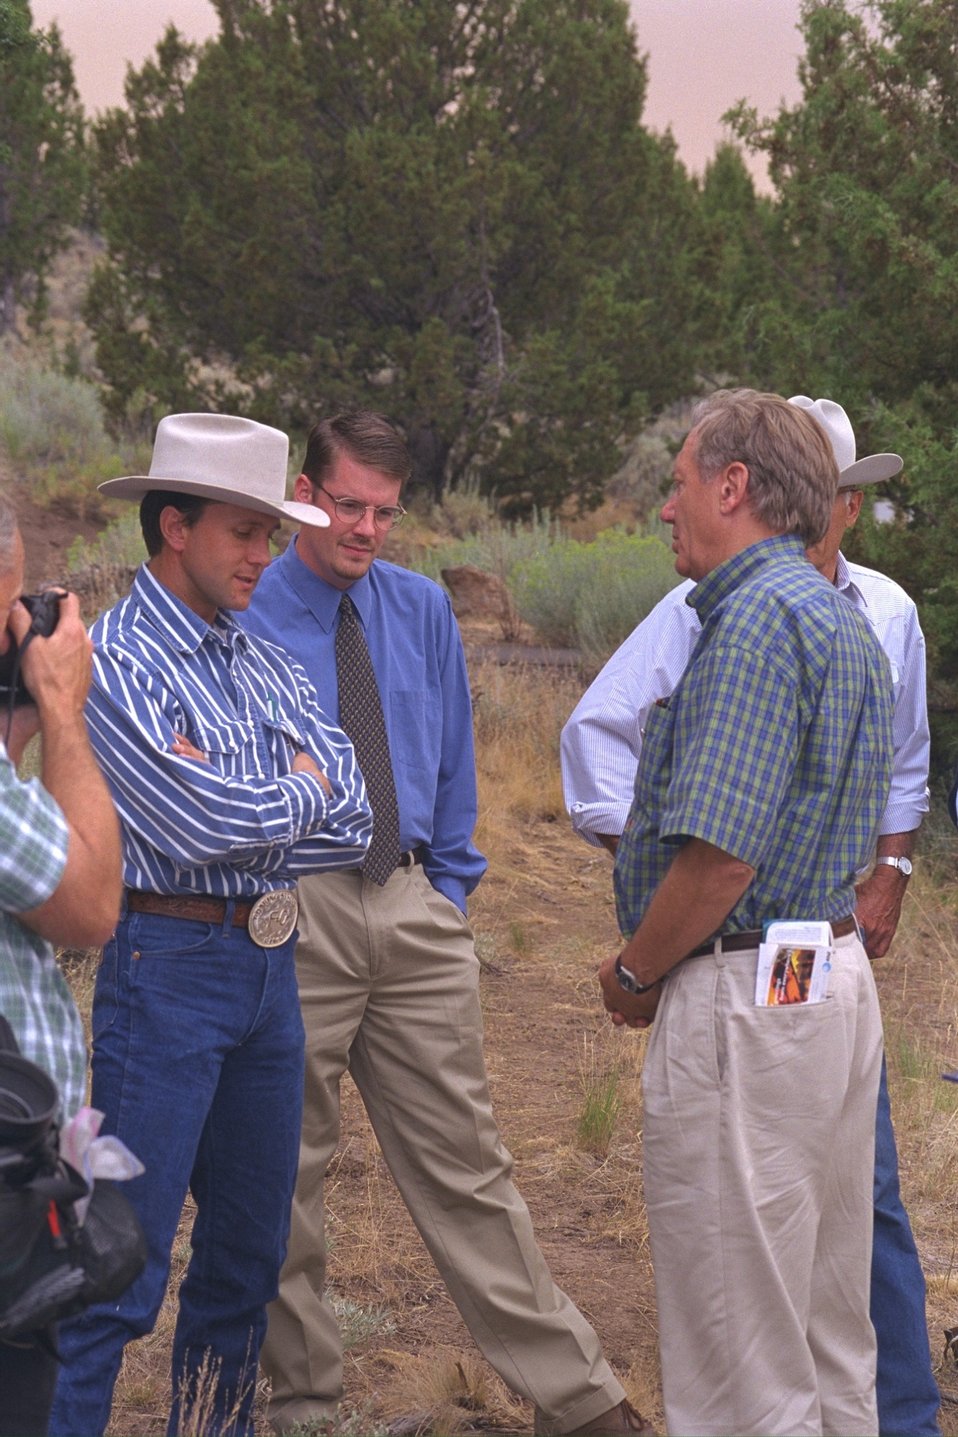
(L - R) Stacie Davies, Matt Smith, aide to congressman Gregg Walden, and Secretary Babbitt on Steens Mountain.